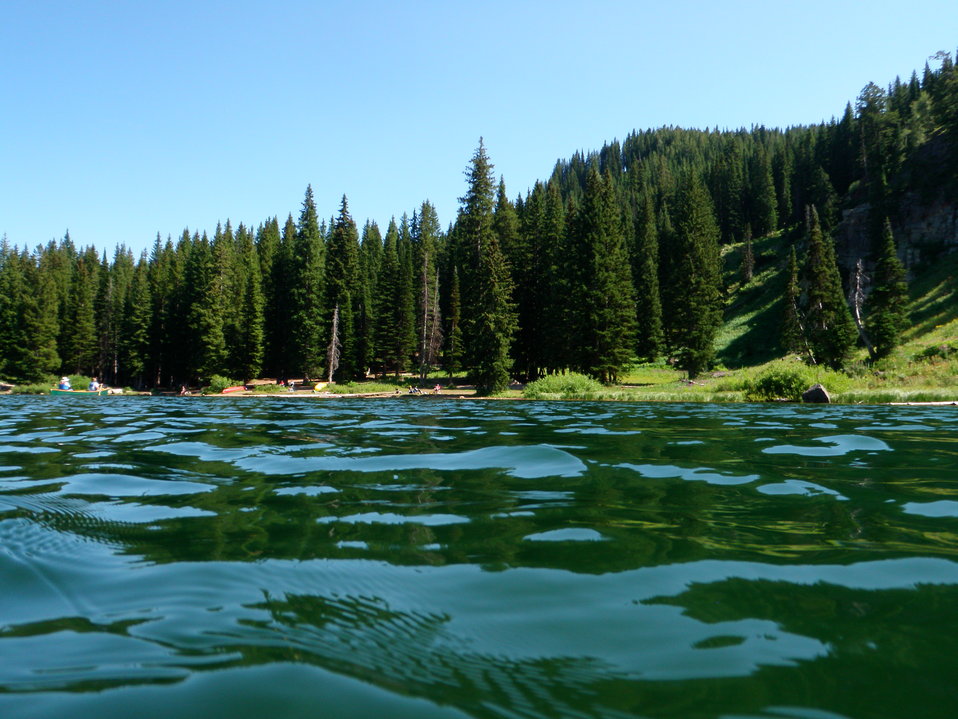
Tony Grove Lake, Cache County, Utah, 11 August 2009 .